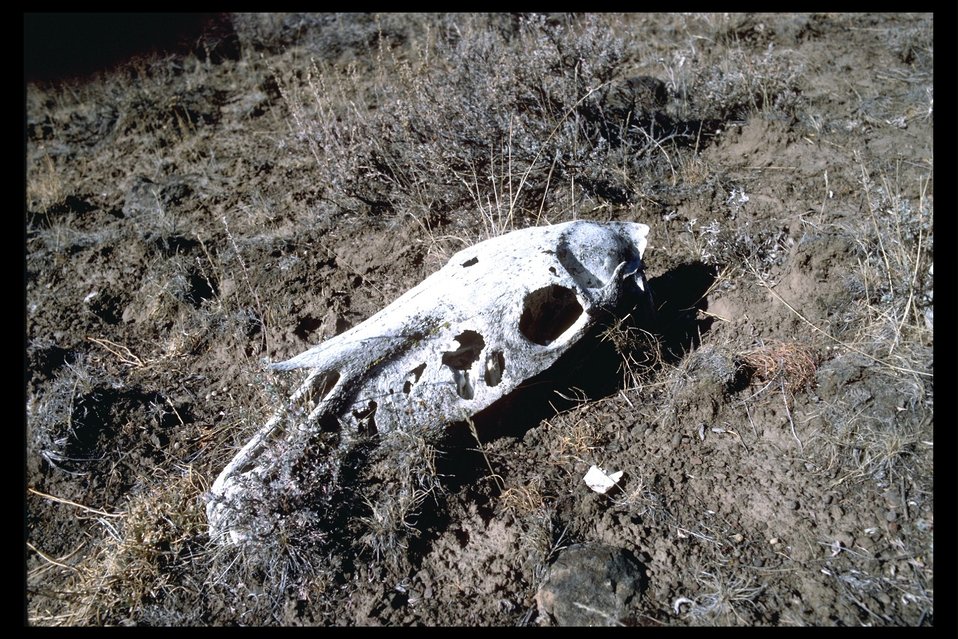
Wild horse skull on the range in Kiger HMA.